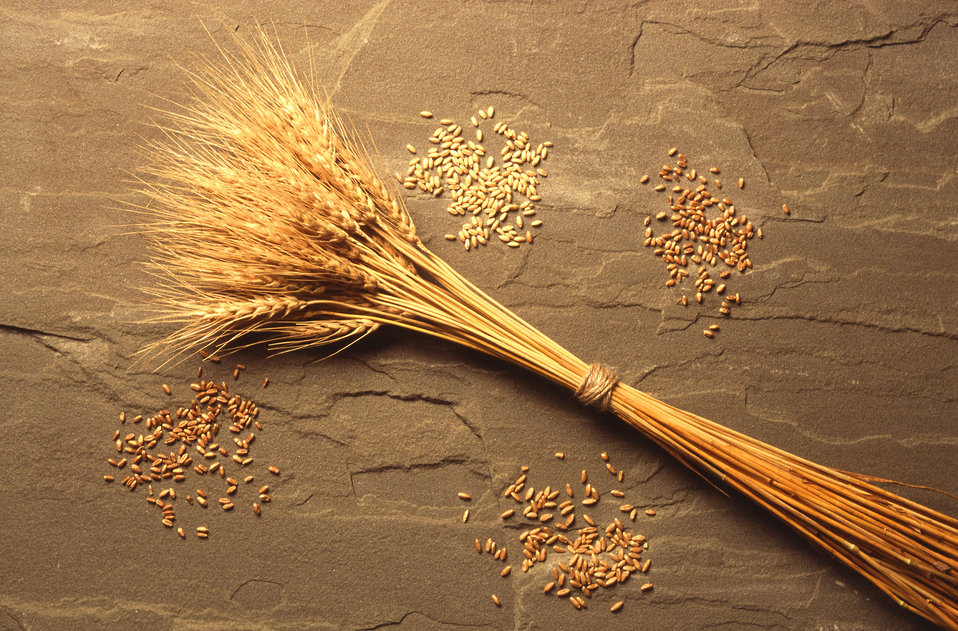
Across the country, ARS scientists who work with wheat aim to make U.S. grown grain better all the time. Techniques for successfully slipping new genes into crops like tomatoes or petunias typically don't work on wheat. One variety of wheat alone accounts for most of the soft red winter wheat that's grown in the Eastern U.S. because it stands up to wheat's most destructive disease, leaf rust. Other varieties resist the Hessian fly and cereal leaf beetle, two costly insect pests. This wheat-breeding program is conducted in cooperation with Purdue and Kansas State Universities. Growers can increase their expertise, thanks to the U.S. Department of Agriculture’s (USDA) Agricultural Research Service (ARS) development of a computer program called MoreCrop. At the touch of a few buttons, a grower can get customized advice on diseases to watch out for and treatments that are appropriate to specific conditions.